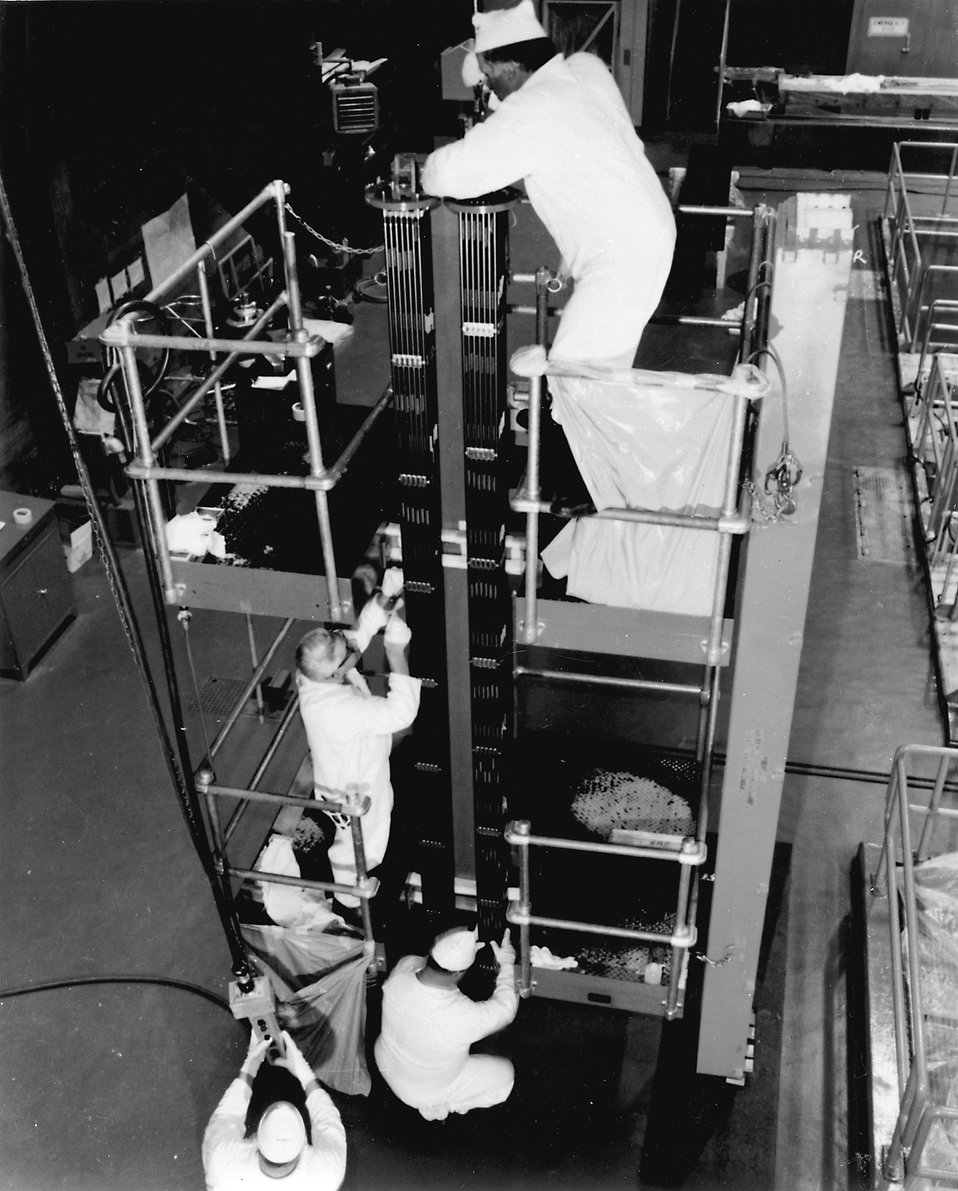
Technicians prepare uranium fuel bundles for loading at Niagara Mohawk Power Corporation's Nine Mile Point Nuclear Station, six miles east of Oswego, New York on Lake Ontario. Circa 1970.